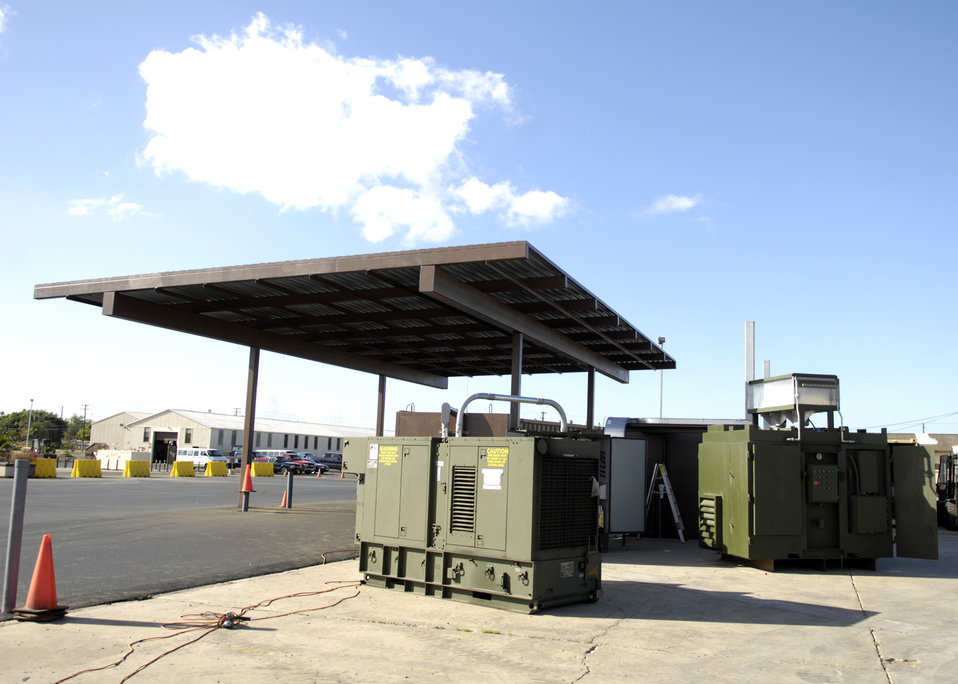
Alternate Energy Source

The HydraFLX System will be brought on line this in November at Hickam Air Force Base, Hawaii. The HydraFLX System is being tested by the Air Force as an alternate energy source. It will generate ultra-pure H2 (hydrogen) from water in a flexible pressure management process for fueling buses, tow-tractors, vans, sedans and ground support equipment. The system can also be deployed anywhere and operate in hostile theaters without infrastructure or pipelines.